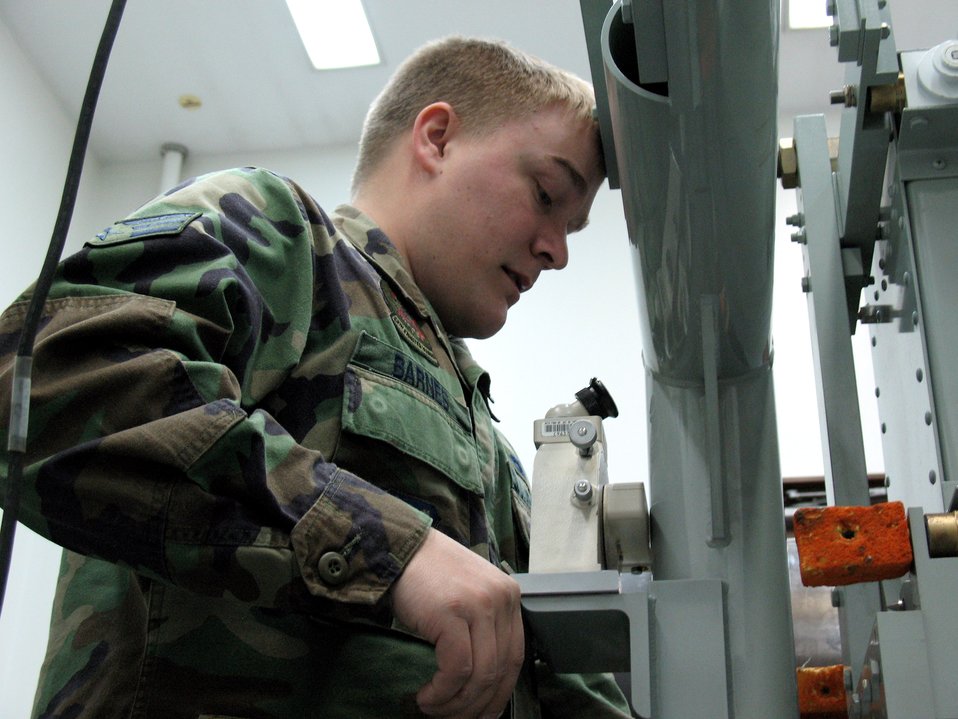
Weapons Airmen help pilots' firing accuracy

Senior Airman Jason Barnes makes adjustments on the collimeter target scope for an F-16 Fighting Falcon April 5 at Misawa Air Base, Japan. Two seperate knobs control up and down and left and right movements, and moving one will usually throw the other off. It takes coordination and patience to get a perfect alignment. Airman Barnes is assigned to the 13th Fighter Squadron at Misawa AB.